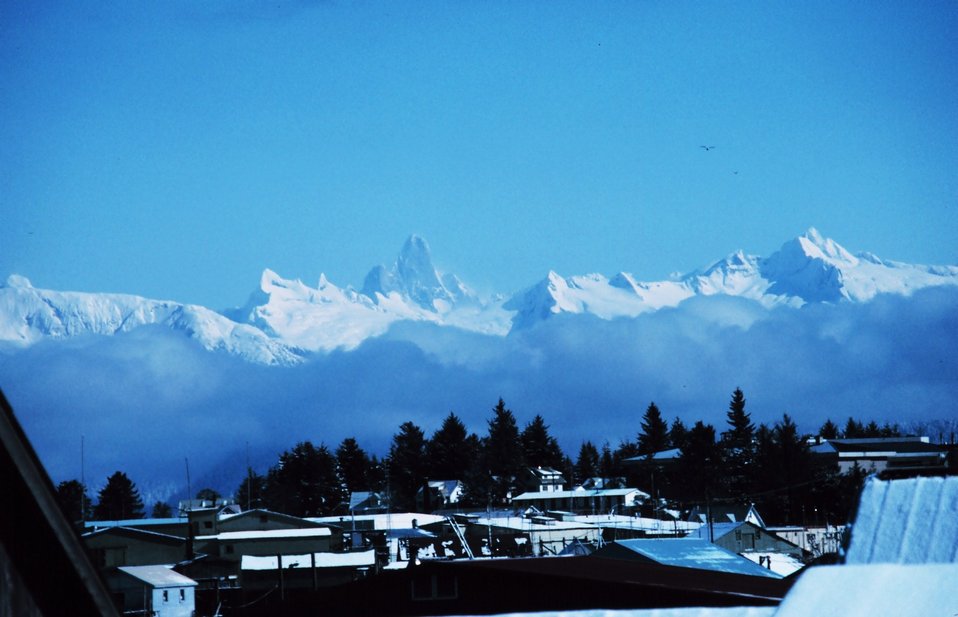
Devil's Thumb as seen from Petersburg